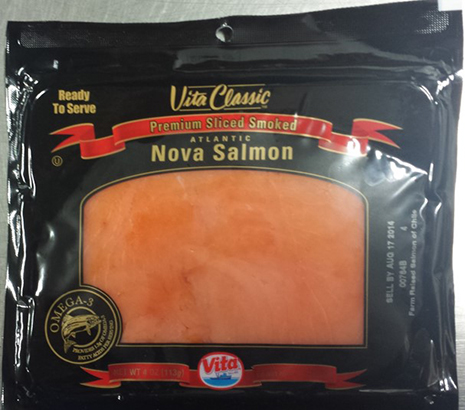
RECALLED – Premium Sliced Smoked Atlantic Salmon

June 16, 2014 – Product Recall – Vita Food Products Issues Voluntary Recall of 4oz Vita Classic Premium Sliced Smoked Atlantic Salmon Due to Possible Health Risk.